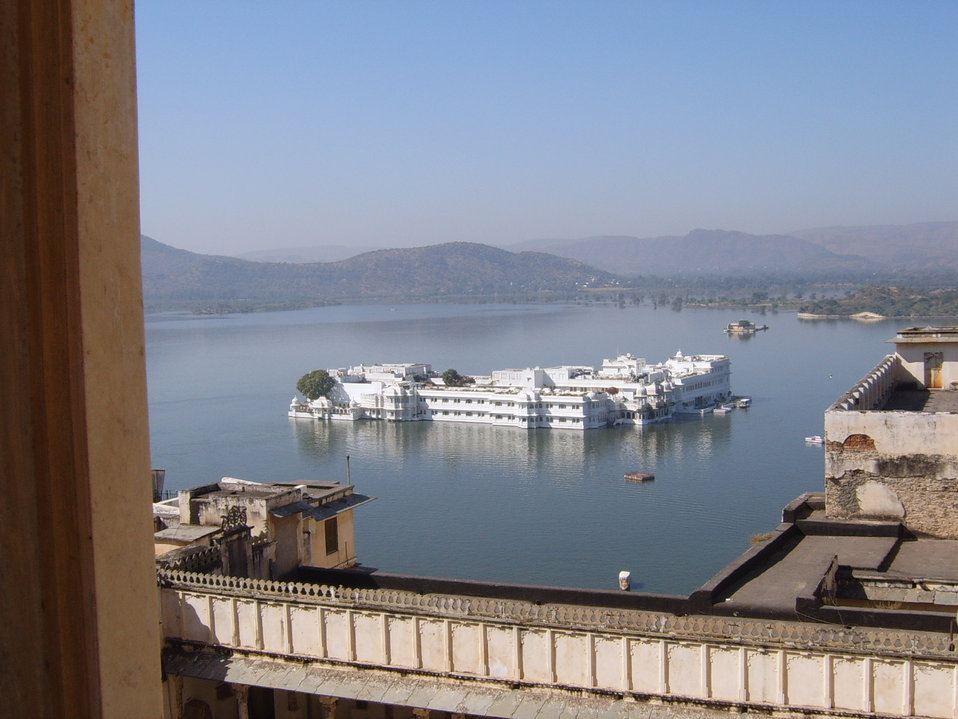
Français : Le Lake Palace à Udaipur, scène du film Octopussy de James Bond, novembre 2005.